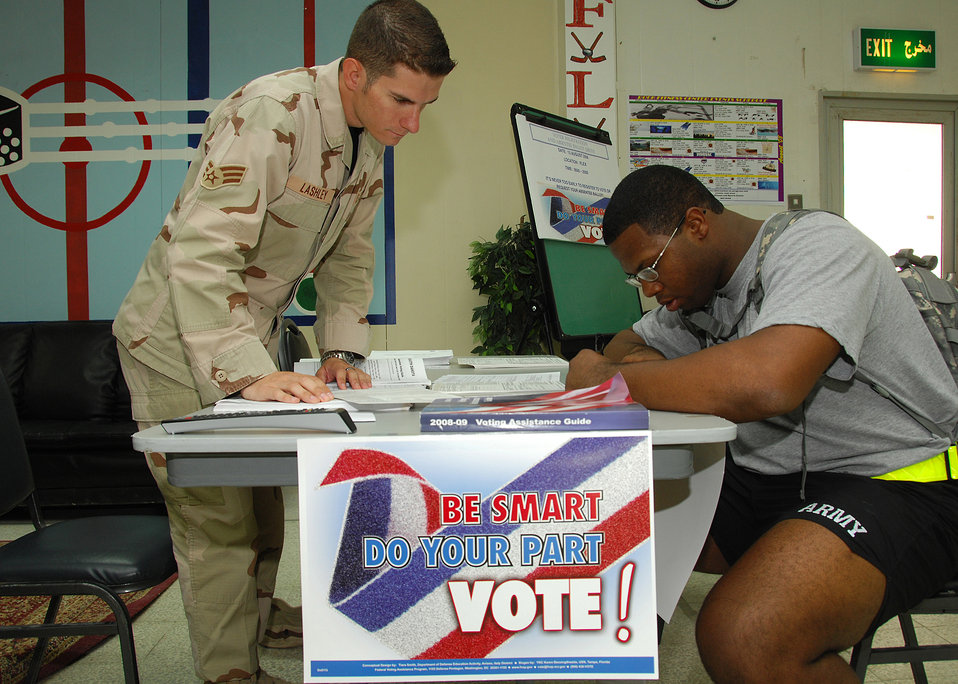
Every vote counts

Senior Airman Brian Lashley, 386th Expeditionary Civil Engineer Squadron voting assistance officer, helps Army Private 1st Class Chris Williams register to vote Aug. 13 at an air base in Southwest Asia. Officials with the 386th Air Expeditionary Wing held a base-wide voter registration and absentee ballot drive to increase servicemember participation in November's general election. Airman Lashley is deployed from Eglin Air Force Base, Fla.